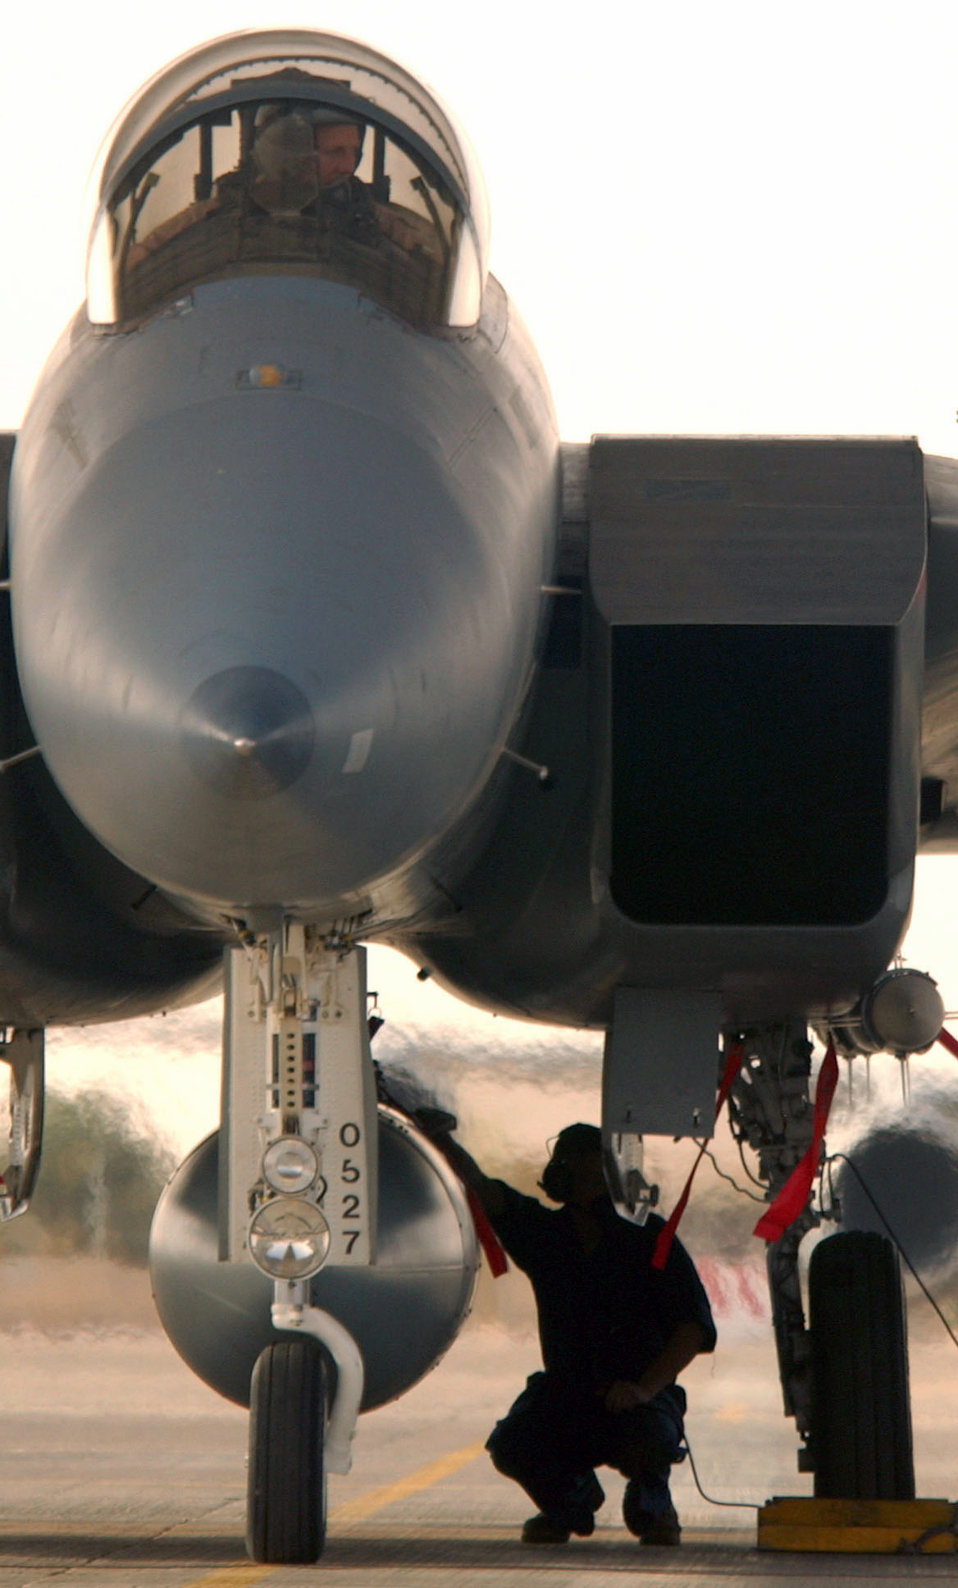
Check... check...

SOUTHWEST ASIA -- An F-15C fighter pilot and crew chief communicate through a short-range radio about the status of the aircraft during a run-down of the mandatory checklists prior to take off on March 16, 2003, in support of Operation Southern Watch at a forward deployed location.